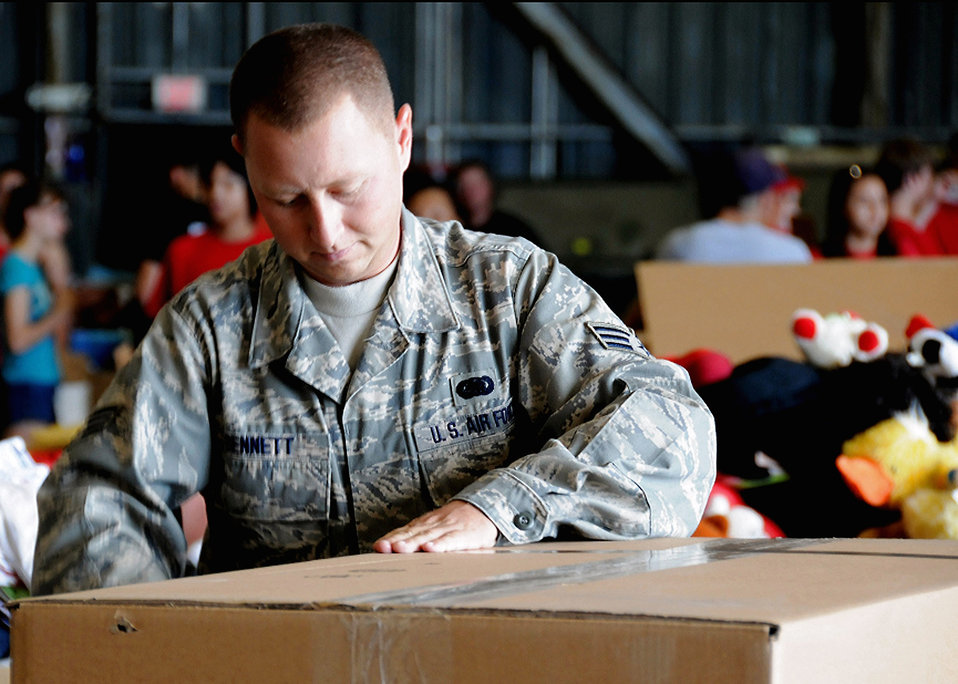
Operation Christmas Drop Holds Final Box Build

Senior Airman Craig Bennett prepares a box to be filled with goods and supplies at Andersen Air Force Base, Guam, Dec. 7. Fishing nets, tools, construction materials, school supplies, shoes, toys and clothing will be dropped in boxes weighing nearly 400 pounds from a C-130 Hercules to aid people on smaller islands that do not have airstrips or major ports during a mission Dec. 17 through Dec.21. Airman Bennett is assigned to the 36th Logistics Readiness Squadron and is an Operation Christmas Drop volunteer.